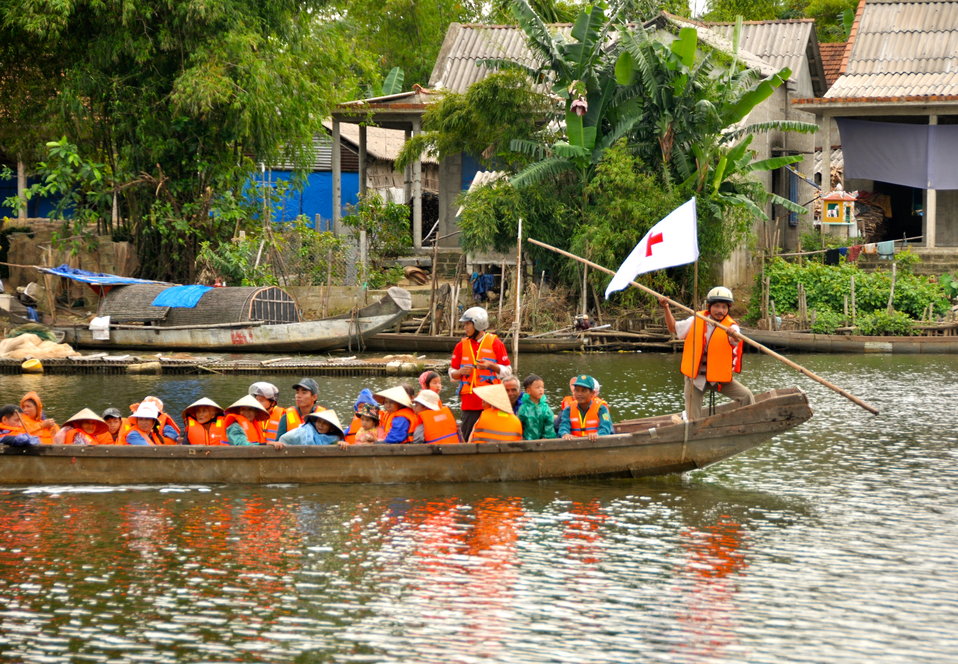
USAID and Save the Children support community evacuation drill and emergency preparedness in central Vietnam

Loc An Commune, Phu Loc District, Thua Thien Hue Province
December 4, 2012, Photo: Richard Nyberg, @USAIDVietnam